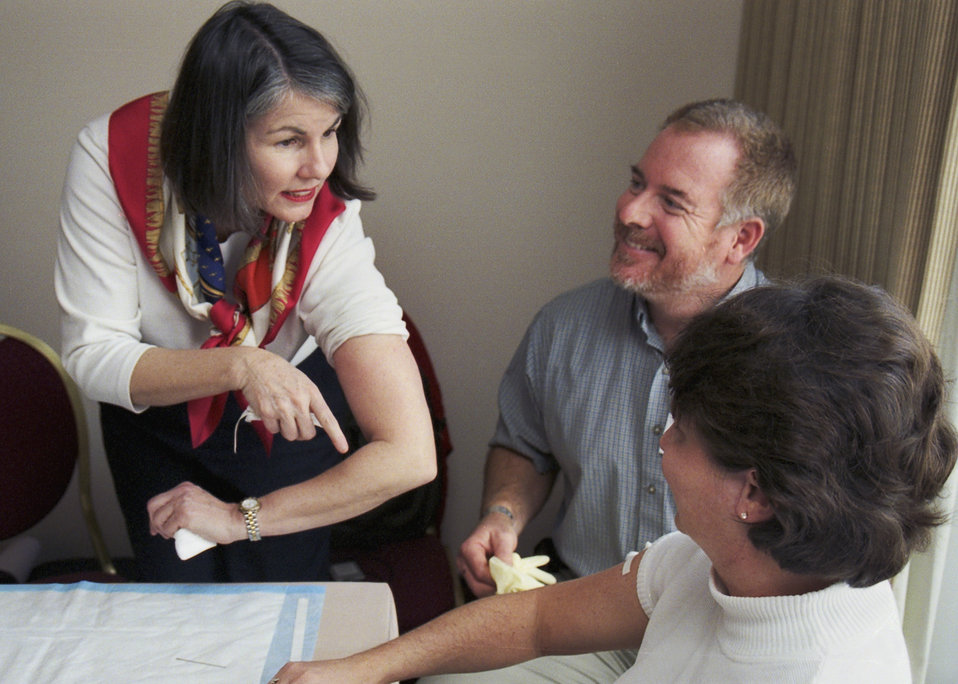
CDC clinician, Melanie King, RN, explains smallpox vaccine application during a 2002 Vaccinator Workshop.